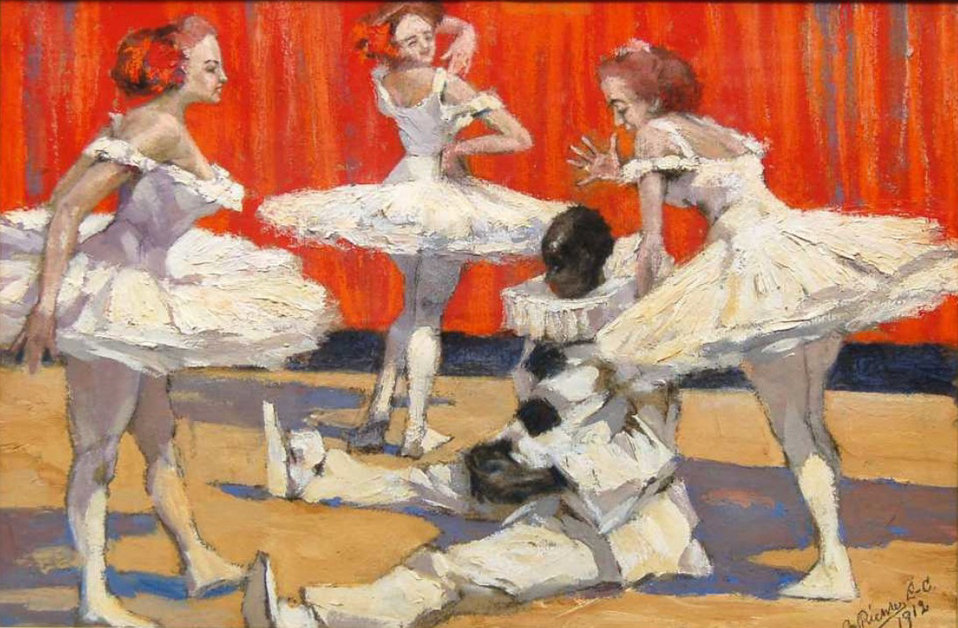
Georg Richter-Lößnitz Balletttänzerinnen und Pierrot 1912